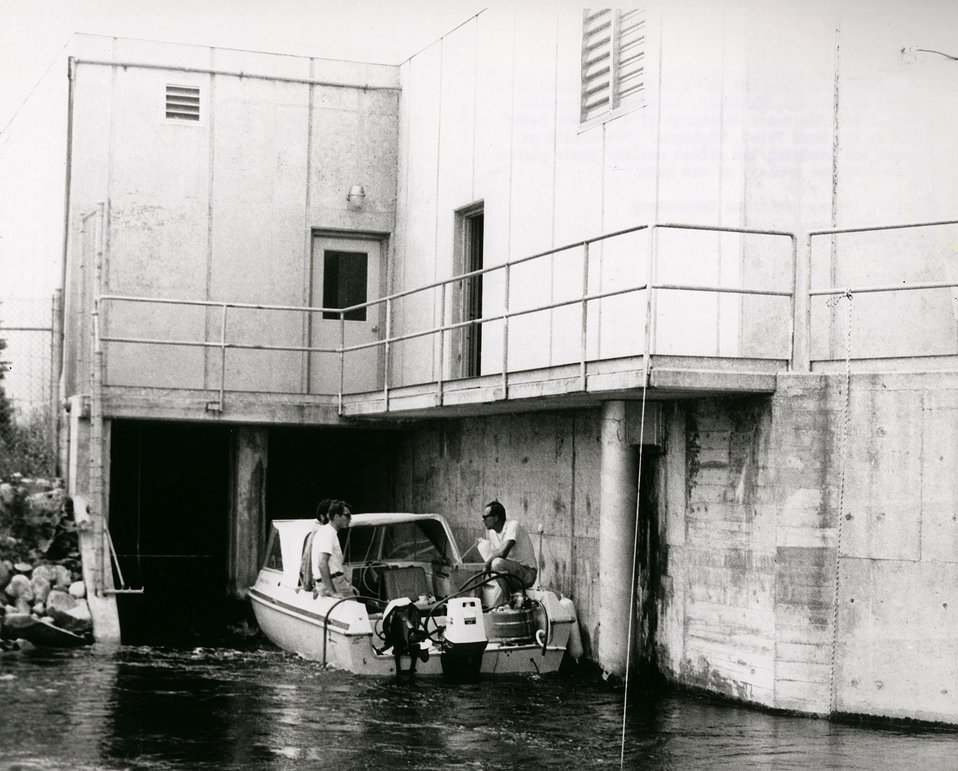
A research team from Argonne takes water samples from the cooling water discharge of a nuclear power plant at Big Rock Point, Michigan. c.1970